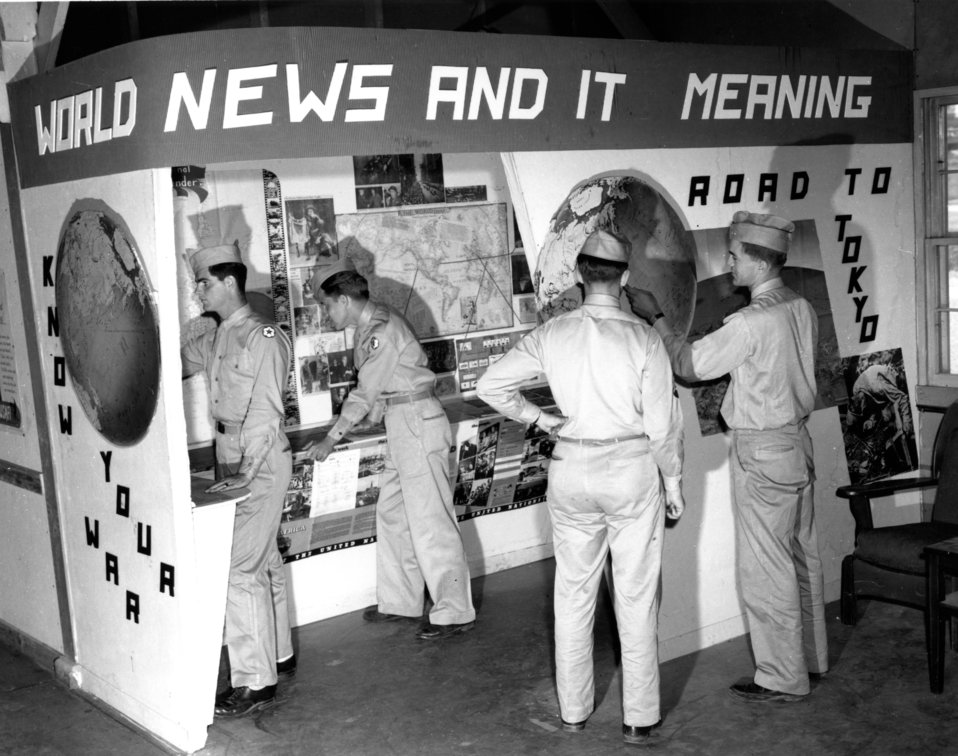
Army Activity at Oak Ridge